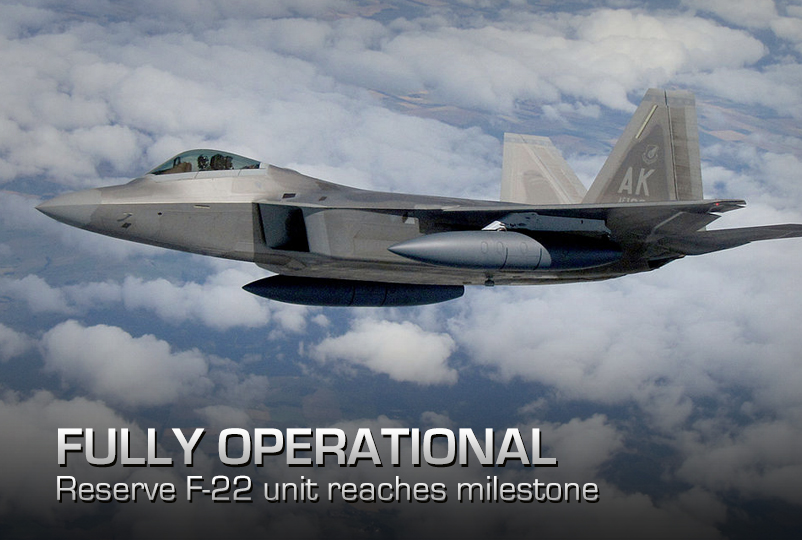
Fully Operational